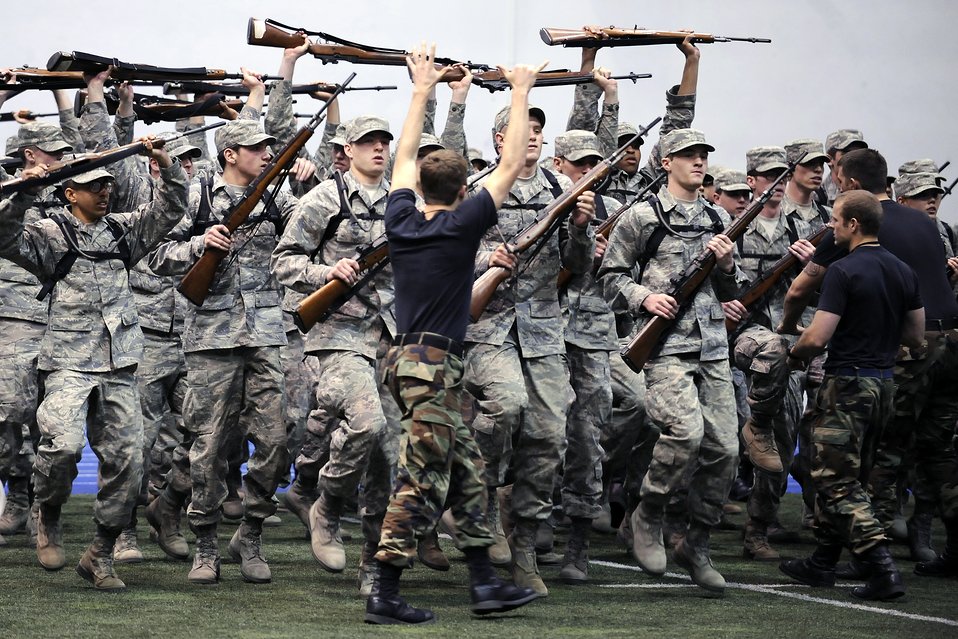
US Air Force Academy, CO

Rifle-toting calisthenics are performed on the assault course in the Cadet Field House during Recognition. Recognition marks the transition of the fourth classmen to upper class status. It is the ceremonial acknowledgement that the fourth class has successfully met the training requirements expected of it, and is prepared to continue its four-year journey through the Academy.